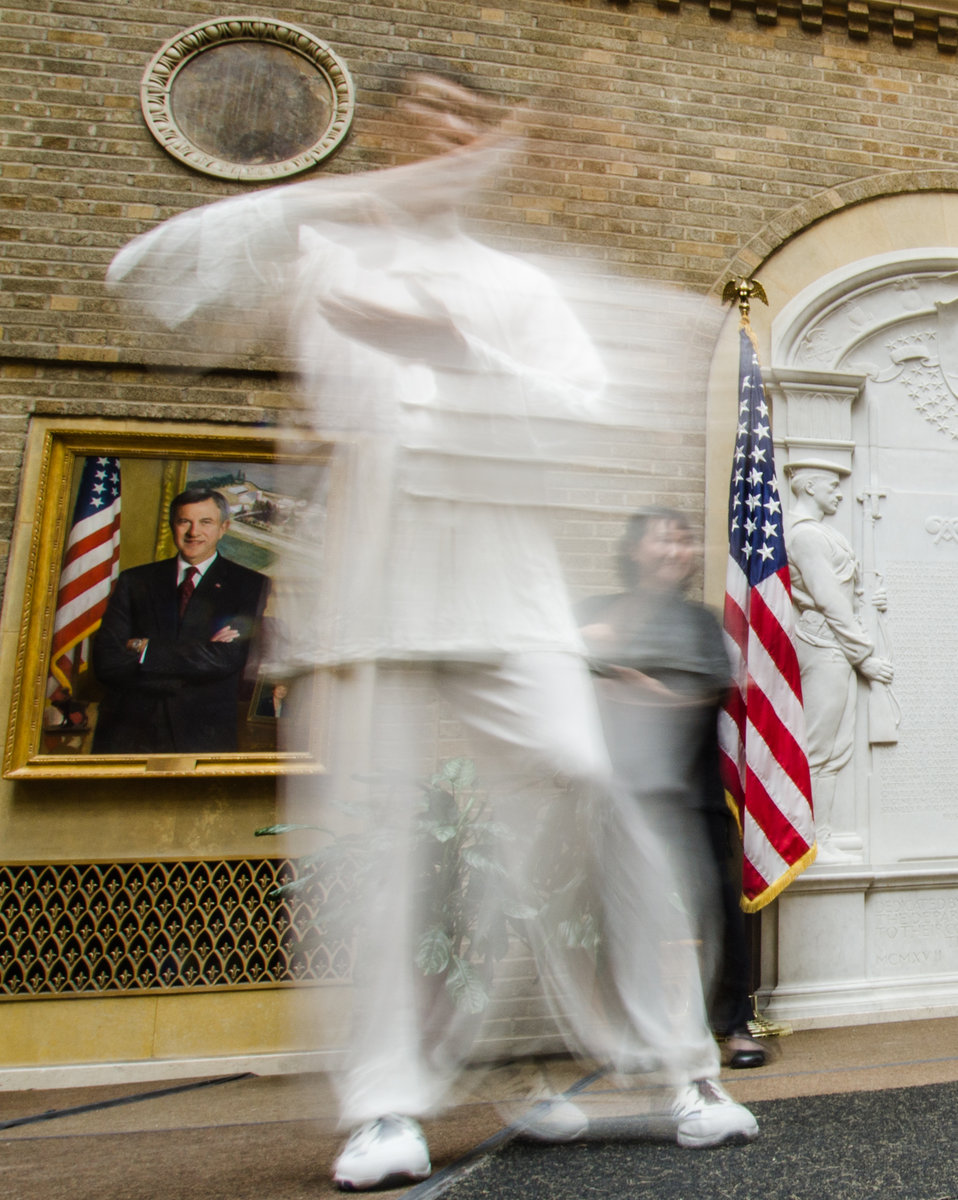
U.S. Department of Agriculture (USDA) employees Albert Chang, Mark Xu, Haijiang Wang MeiXu and Uni Li, from (respectively) Rural Development (RD), Foreign Agricultural Service (FAS), Grain Inspection, Packers & Stockyards Administration (GIPSA), Agricultural Marketing Service (AMS) and Departmental Management (DM); demonstrate the Chinese martial art of tai chi, during the USDA Asian Pacific American Heritage Month Observance, at the USDA headquarters, Whitten Building patio, in Washington, D.C., on Thursday, May 23, 2013. This year’s theme is “Building leadership; Embracing the Cultural Values and Inclusions.”